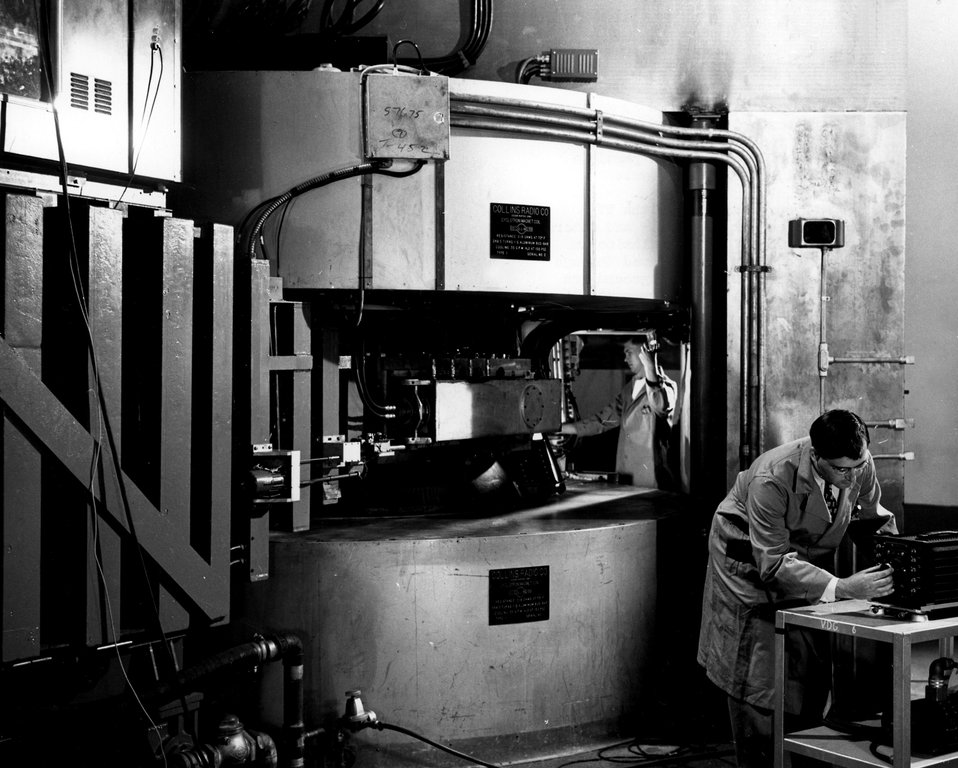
The Gyclotron at AEC's Brookhaven National Laboratory.